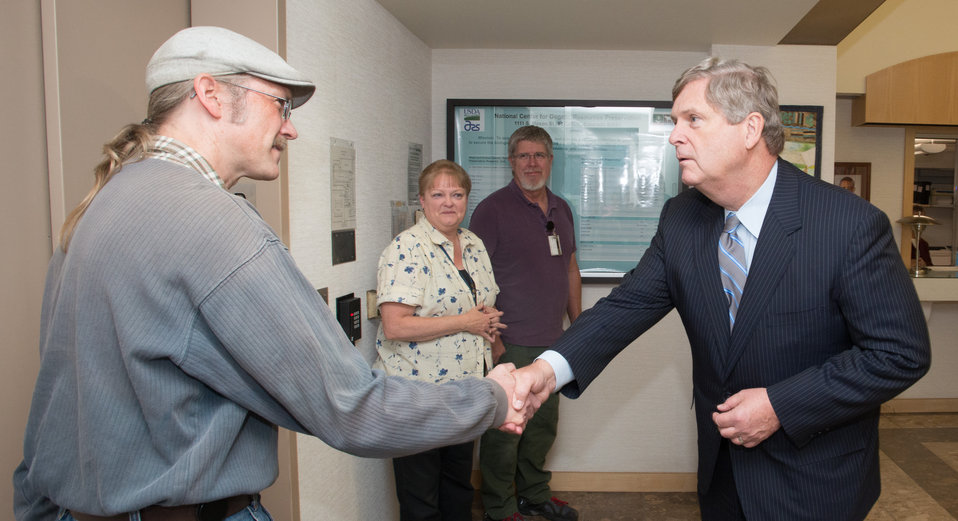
Agriculture Secretary Tom Vilsack chats with, left to right, Adam Henk, Patricia Conine, and William Prang, about their and thanking them for all that they do at the Agriculture Research Service (ARS) National Center for Genetic Resources Preservation (NCGRP) in Ft. Collins, CO, on Wednesday, Nov. 6, 2013.